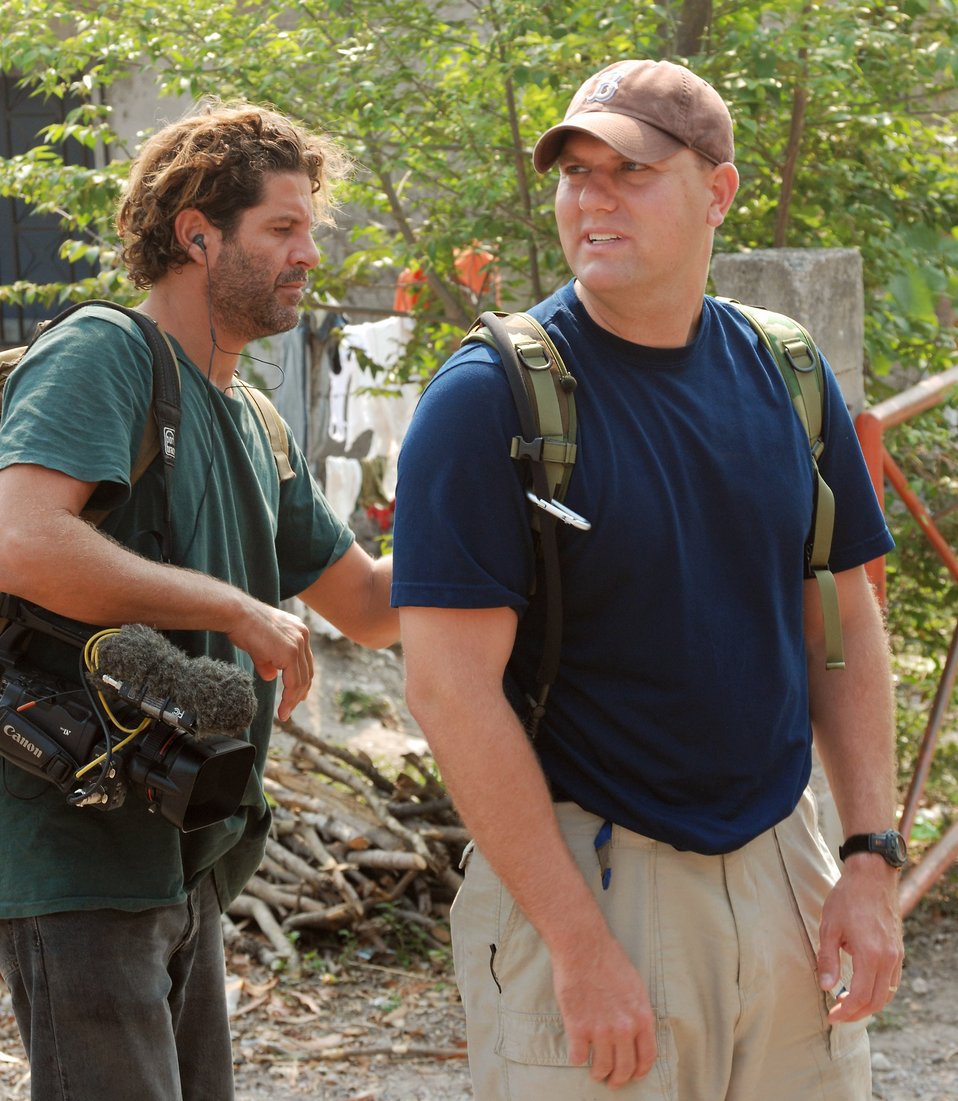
JTF-Bravo volunteers give needed food to local Hondurans

CNN photographer Alfredo de Lara